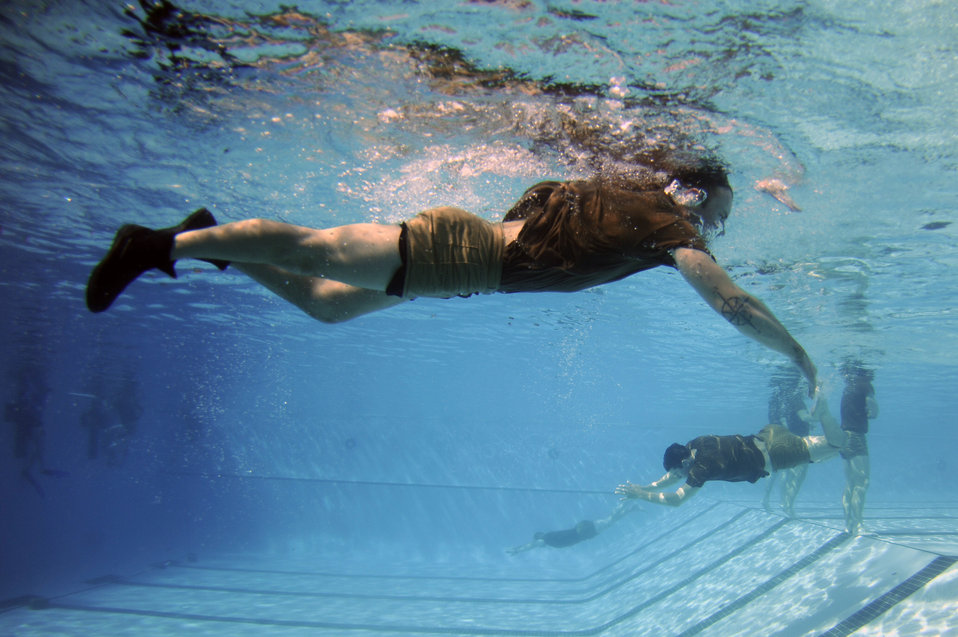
Special Tactics Training

Special operations Airmen train in a swimming pool Feb. 10 during their pre-scuba formal training at Hurlburt Field, Fla. The Airmen are assigned to the Special Tactics Training Squadron.